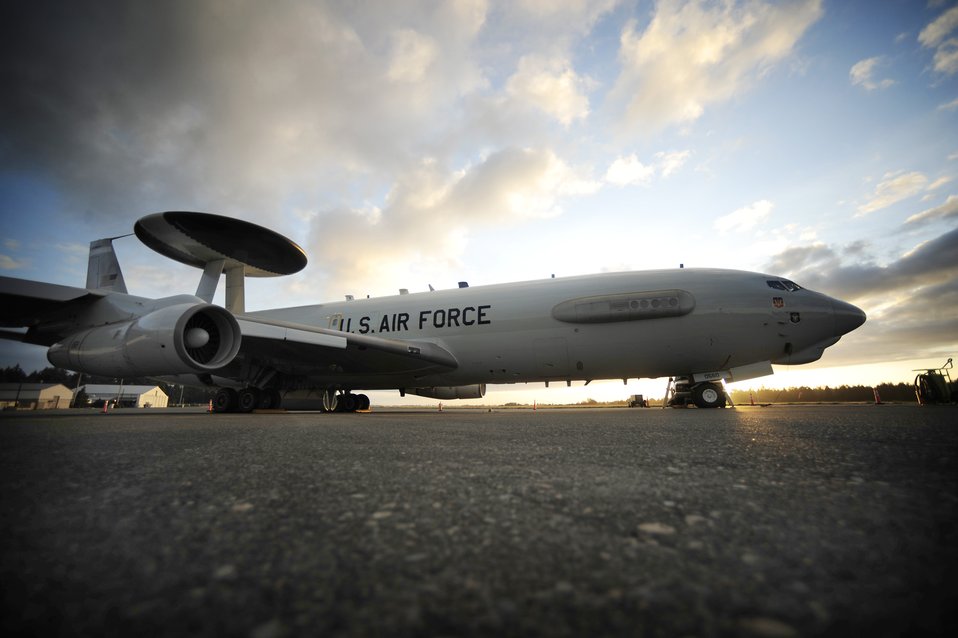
Ready for action

An E-3 Sentry Airborne Warning and Control System aircraft prepares to launch in support of Amalgam Dart 2009 June 20 at McChord Air Force Base, Wash. Amalgam Dart is a field test of the Department of Defense's ability to rapidly deploy a total air integrated defense system in the United States in order to deter, detect and defeat airborne threats. The E-3 is from the 965th Airborne Air Control Squadron at Tinker AFB, Okla.